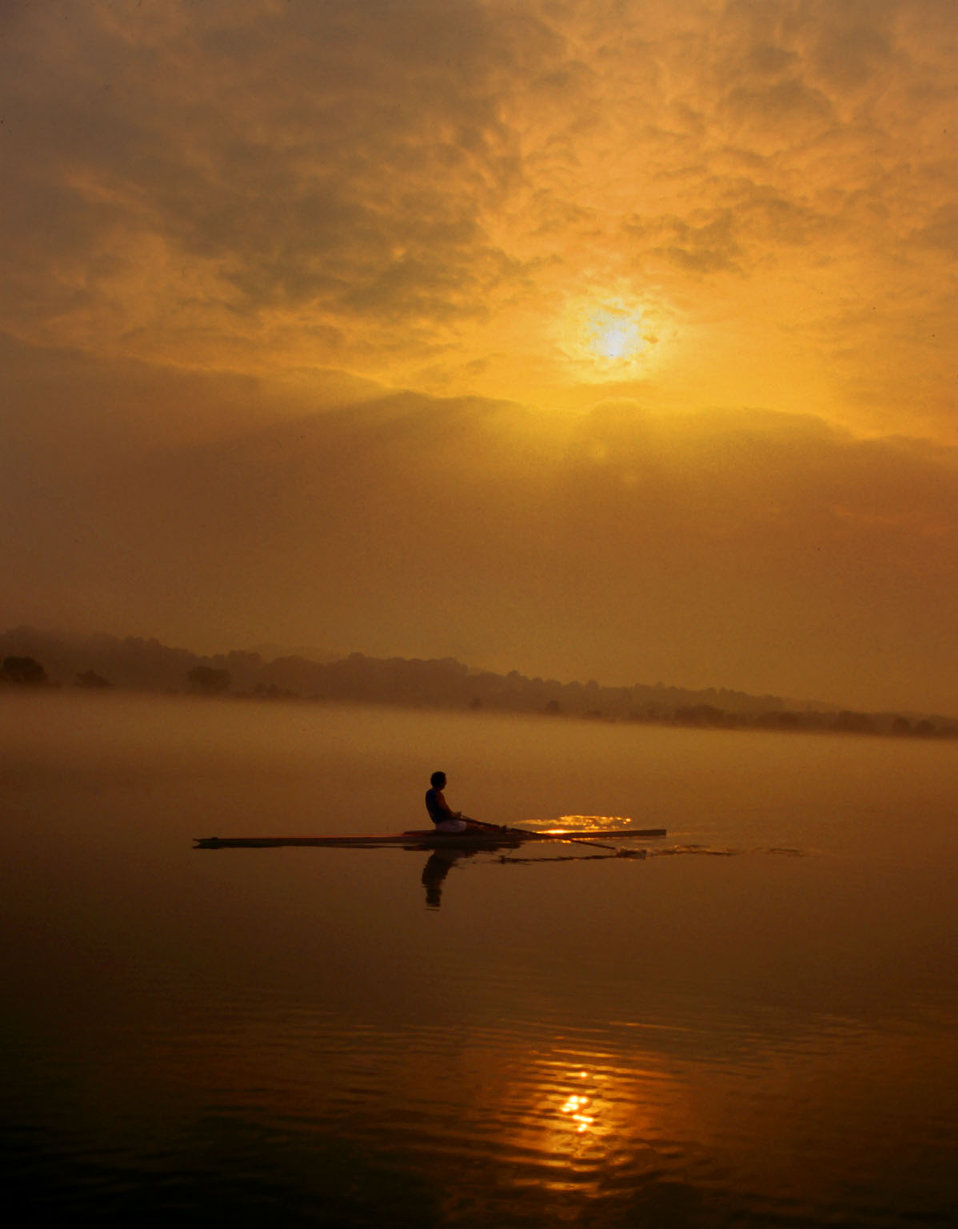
Sculling on Melton Hill Lake Oak Ridge

94-667 DOE photo by Lynn Freeny

Sculling on Melton Hill Lake Oak Ridge Tennessee 8-25-1994